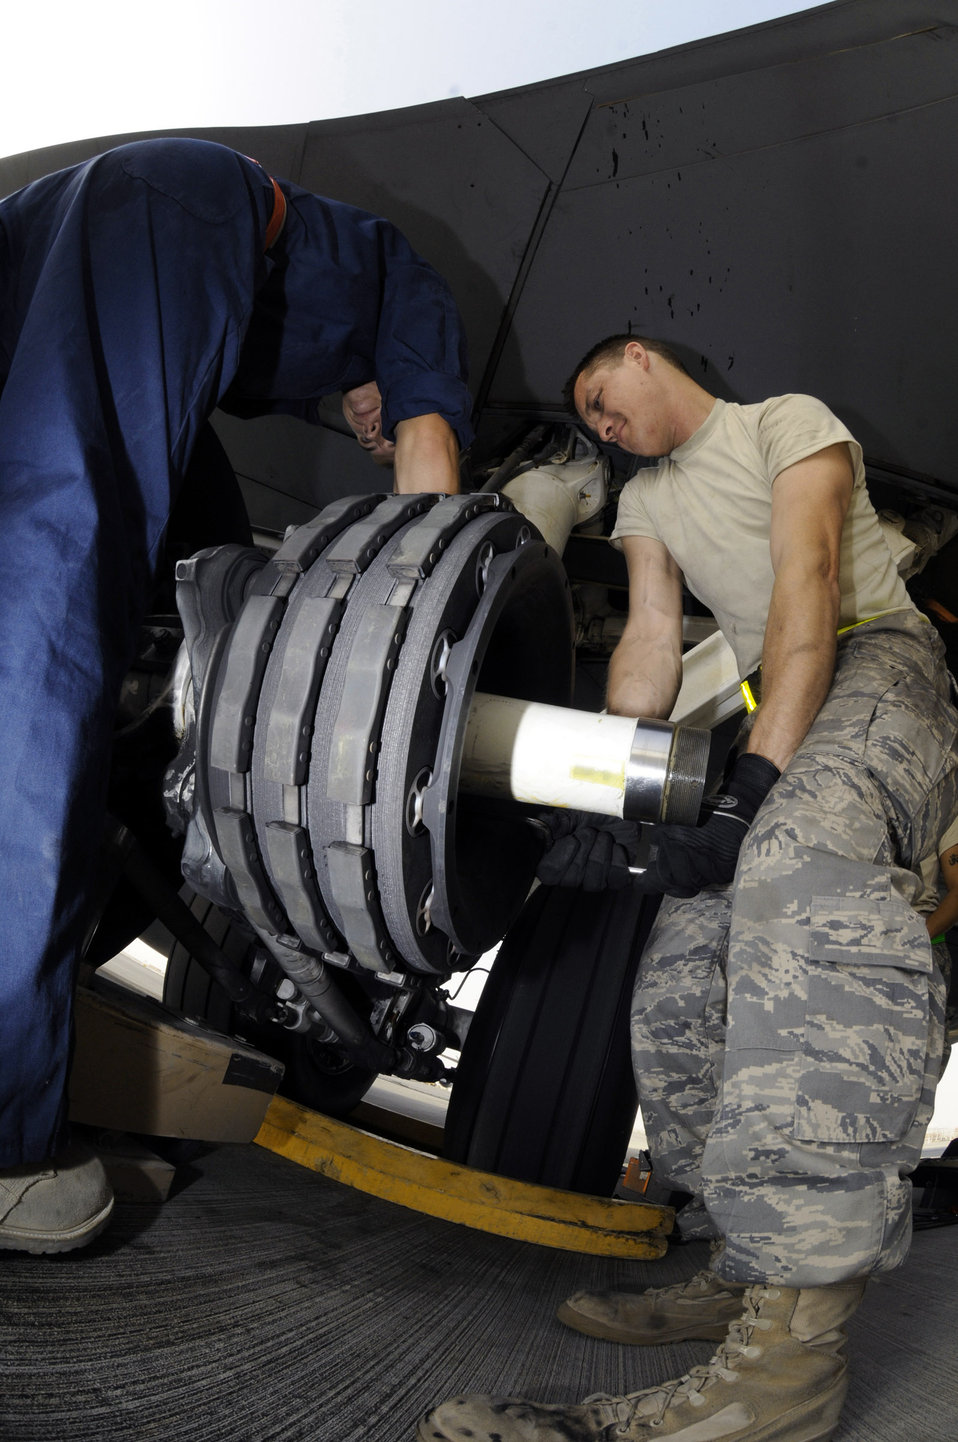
Brake it down

Airman 1st Class Ryan McMillen and Tech. Sgt. Chris Reiter break loose the bolts holding an unserviceable brake unit on a KC-135 Stratotanker Sept. 28 at an air base in Southwest Asia. The brake set had to be replaced when a crack in the heat shield was detected during a post-flight inspection. Sergeant Reiter, a native of Farmington, N.M., is deployed from Fairchild Air Force Base, Wash. Airman McMillen is from Warsaw, Ill., and deployed from McConnell AFB, Kan. Both are assigned to the 340th Aircraft Maintenance Unit.